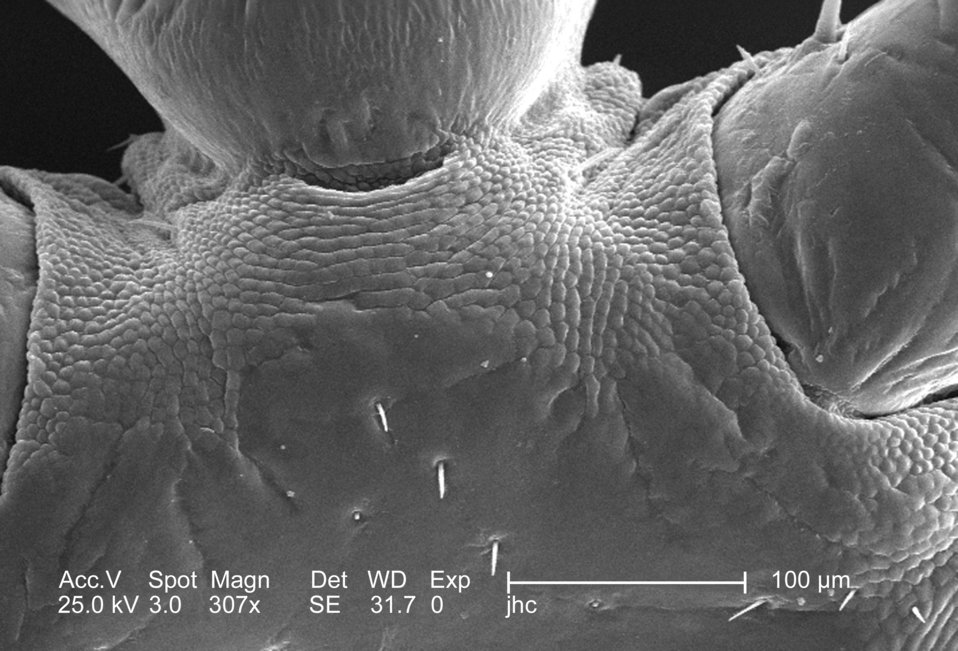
From a ventral perspective, and at a moderate magnification of 307x, this 2006 scanning electron micrograph (SEM) depicted an enlarged view of the chitinous, exoskeletal surface of a female louse, Pediculus humanus var. corporis, in the region where the organism's forelegs attached to its thoracic region. In this particular view, the exoskeleton seems to be composed of interlocking plates, which is not far from the case, in order to provide flexibility to this patent joint, the chitinous components were arranged in a plate-like manner, attached to one another with thin, by strong layers of exoskeletal chitin. Chitin is a molecule made up of bound units of acetylglucosamine, which is joined in such a way as to allow for increased points at which hydrogen bonding can occur. In this way chitin provides increased strength, and durability as an exoskeletal foundation.